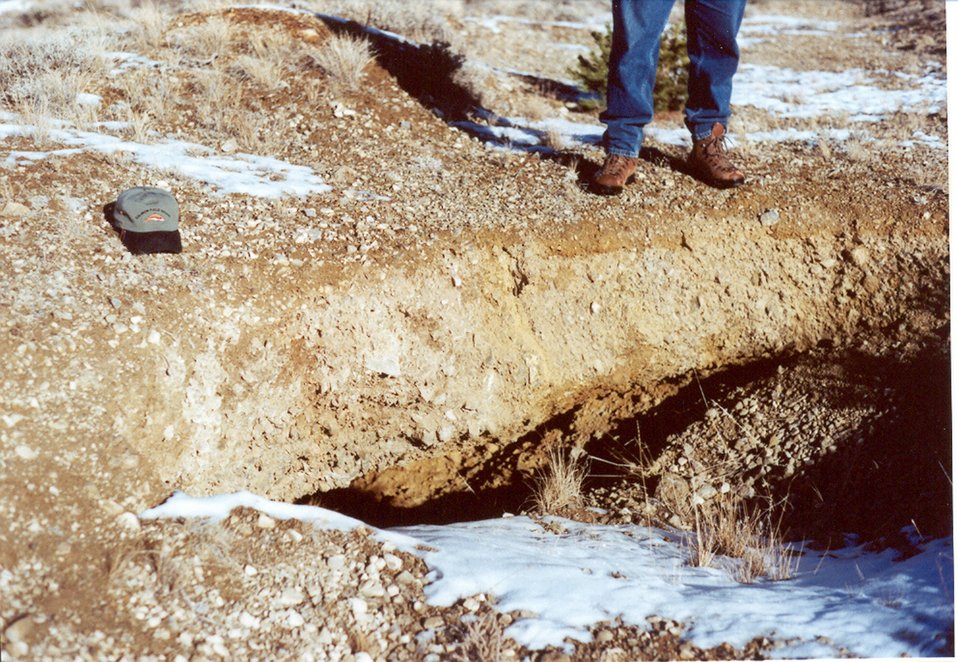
Abandoned Mine dump Salmon Field Office Upper Columbia Salmon Clearwater District UCSC